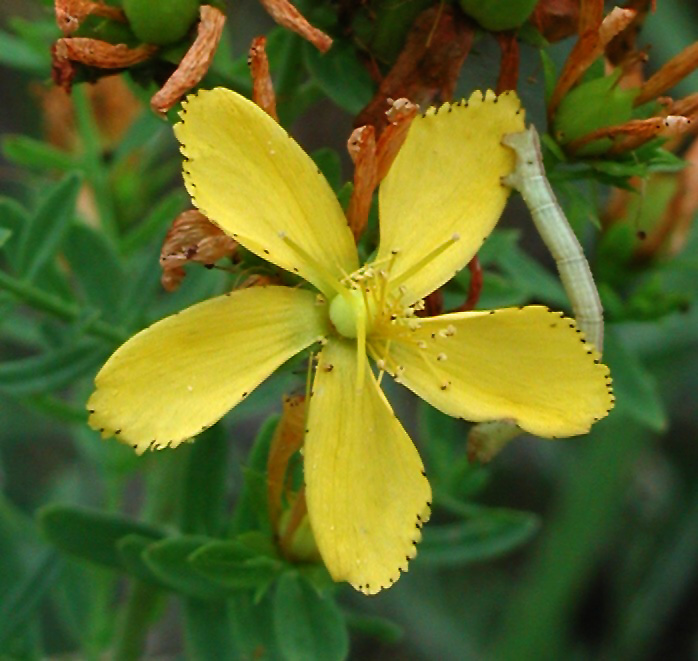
St. johns wort with caterpillar

Edwin B. Forsythe National Wildlife Refuge, NJ
Photo: Anita 363, Creative Commons